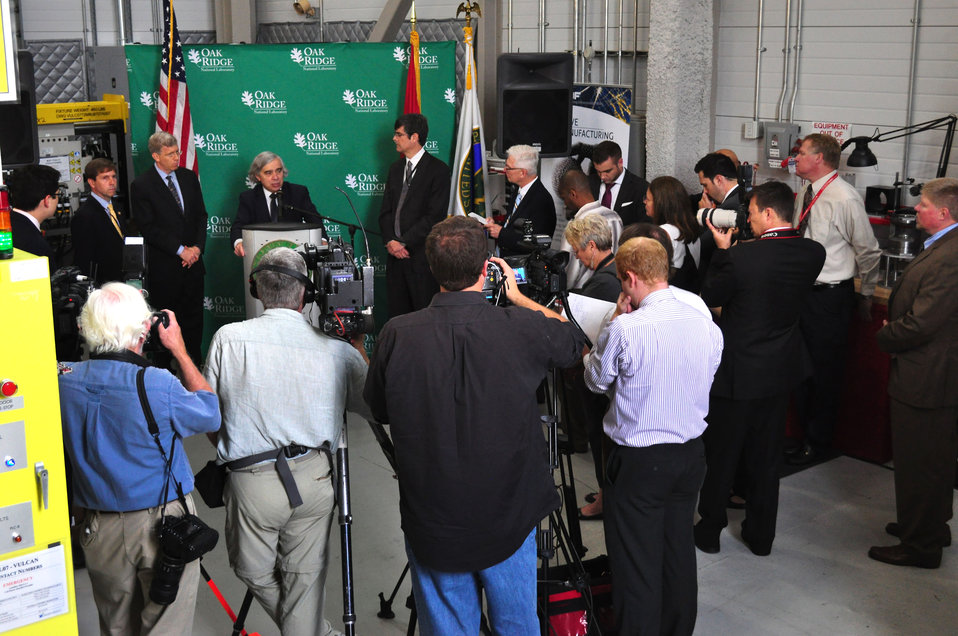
DOE Secretary of Energy Ernest Moniz in Oak Ridge

13-064 DOE photo Lynn Freeny Oak Ridge Tennessee